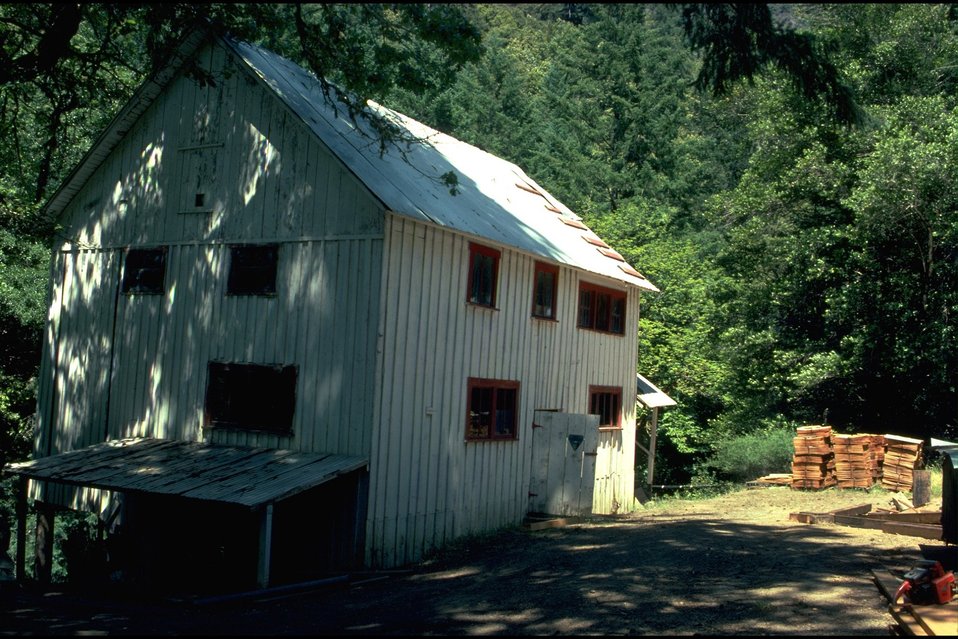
Rogue River Ranch - Tabernade under repair.